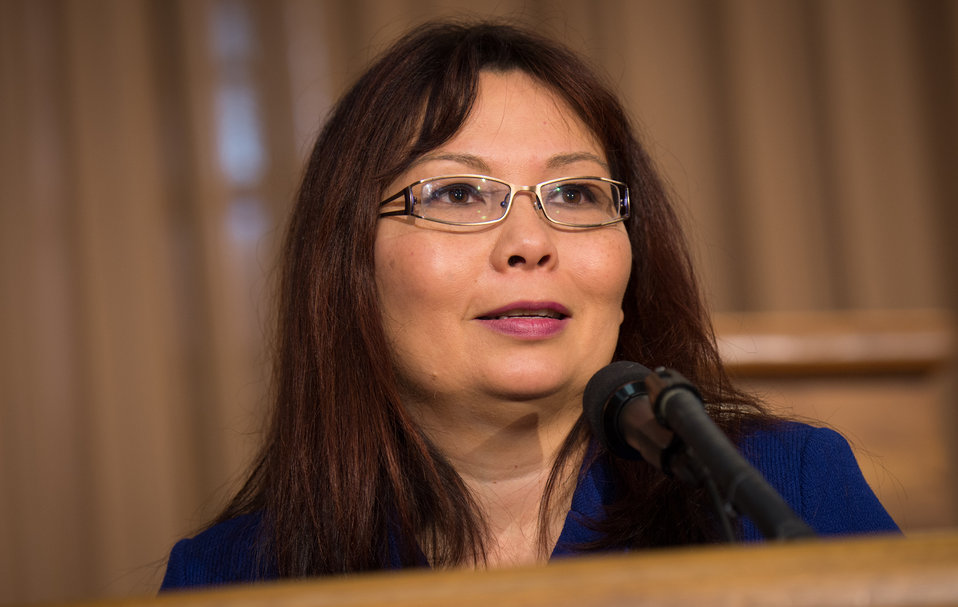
U.S. Congresswoman Tammy Duckworth (D.-Ill.) is the keynote speaker at the 2013 U.S. Department of Agriculture (USDA), Veterans’ Day Observance, whose theme is “VALOR, COURAGE, SACRIFICE – HONORING ALL WHO SERVED,” in Washington, DC, on Wednesday, November 20, 2013. Congresswoman Tammy Duckworth is an Iraq War Veteran and former Assistant Secretary of Veterans Affairs. In 2004, Duckworth was deployed to Iraq as a Blackhawk helicopter pilot for the Illinois Army National Guard. She was one of the first Army women to fly combat missions during Operation Iraqi Freedom until her Blackhawk helicopter was hit by an RPG on November 12, 2004. Duckworth lost her legs and partial use of her right arm in the explosion and was awarded a Purple Heart for her combat injuries. Duckworth declined a military medical retirement and continues to drill as a Lieutenant Colonel in the Illinois Army National Guard.